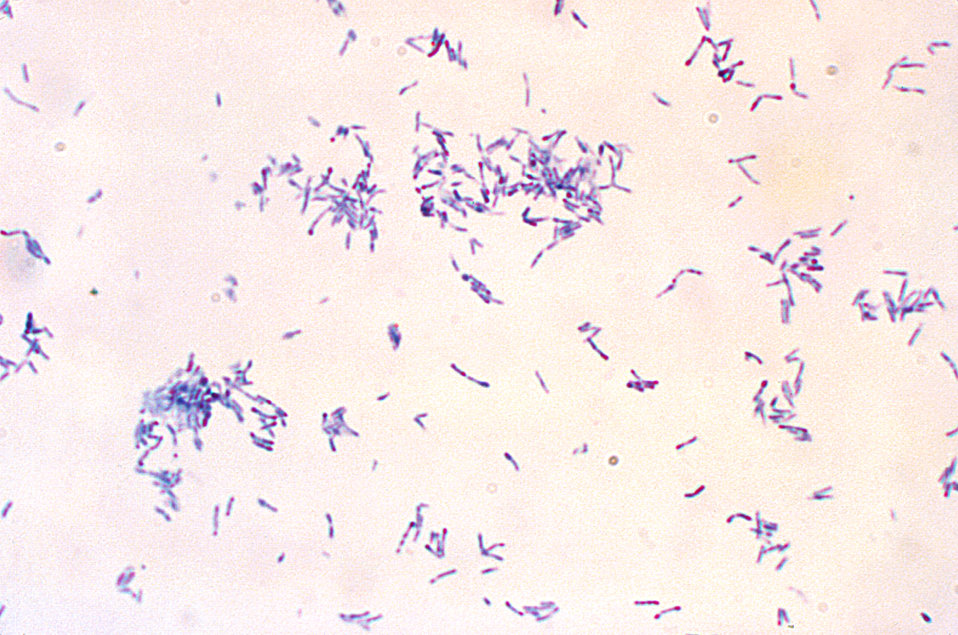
Photomicrograph of Corynebacterium diphtheriae magnified 1200x.